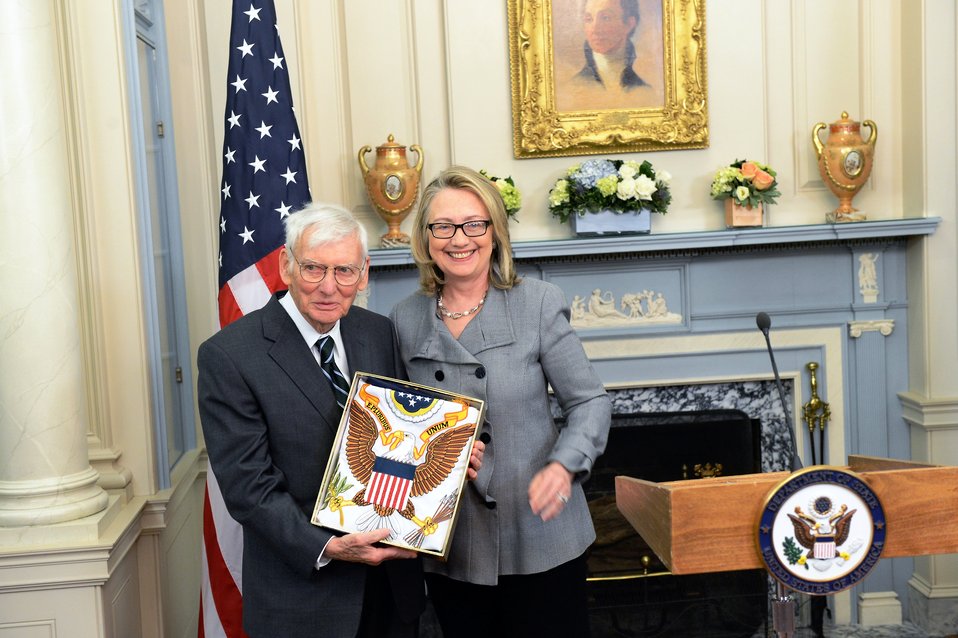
Secretary Clinton Poses for a Photo With Ambassador Rooney

U.S. Secretary of State Hillary Rodham Clinton participates in a Flag Ceremony for U.S. Ambassador to Ireland Dan Rooney at the U.S. Department of State in Washington, D.C., January 9, 2013.